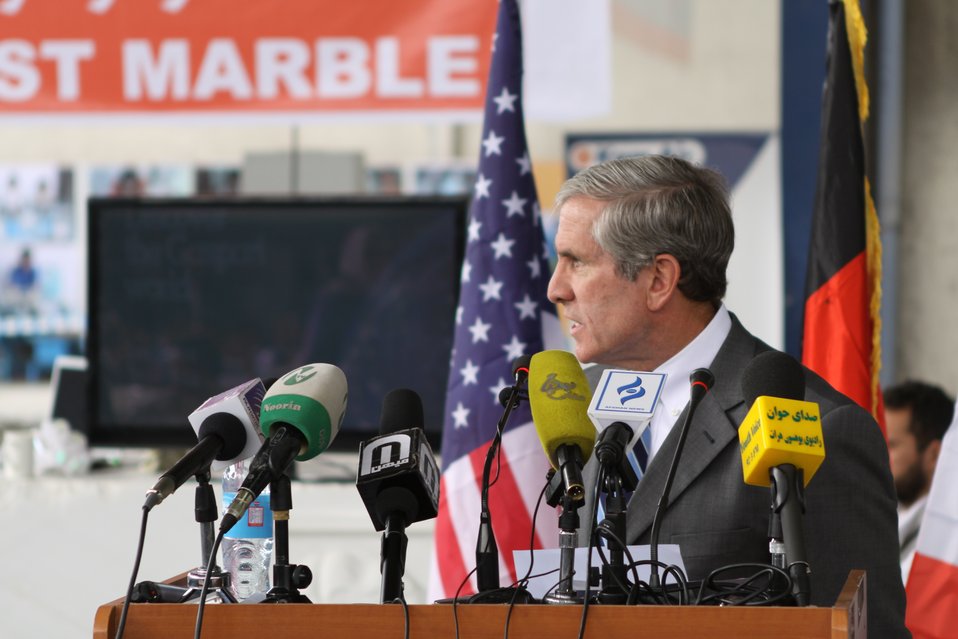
100525 Hirat Marble Conference 288